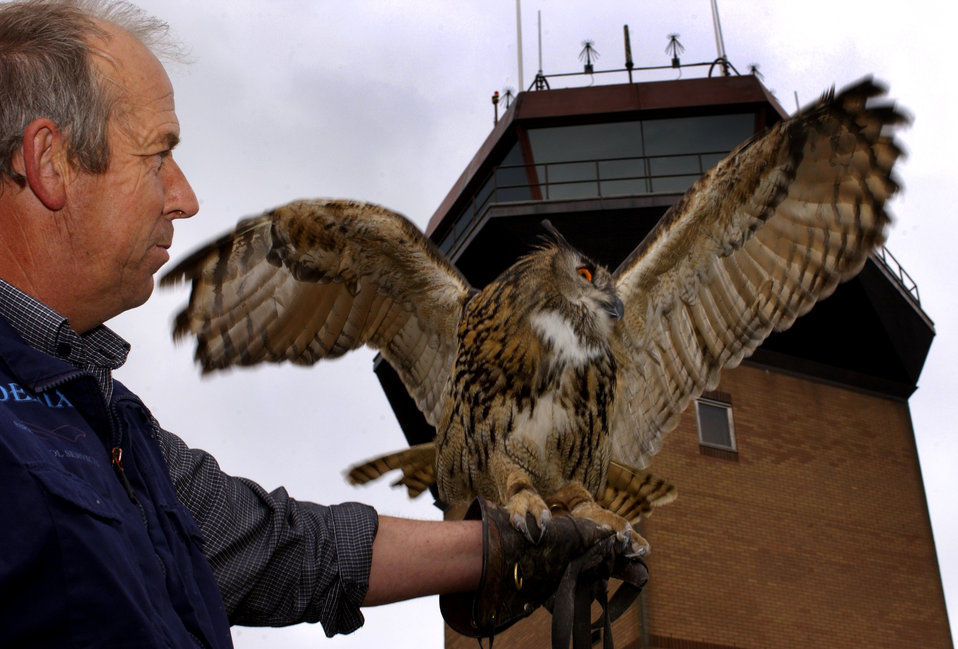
Who's on the flightline

ROYAL AIR FORCE LAKENHEATH, England -- Phoenix Bird Control handler Keith Mutton holds Twinkle, a European Eagle owl on the flightline here May 6. Mr. Mutton has patrolled the flightline with his birds for more than 30 years. This owl joins six falcons for the purpose of keeping the runway clear of birds before aircraft fly missions here.